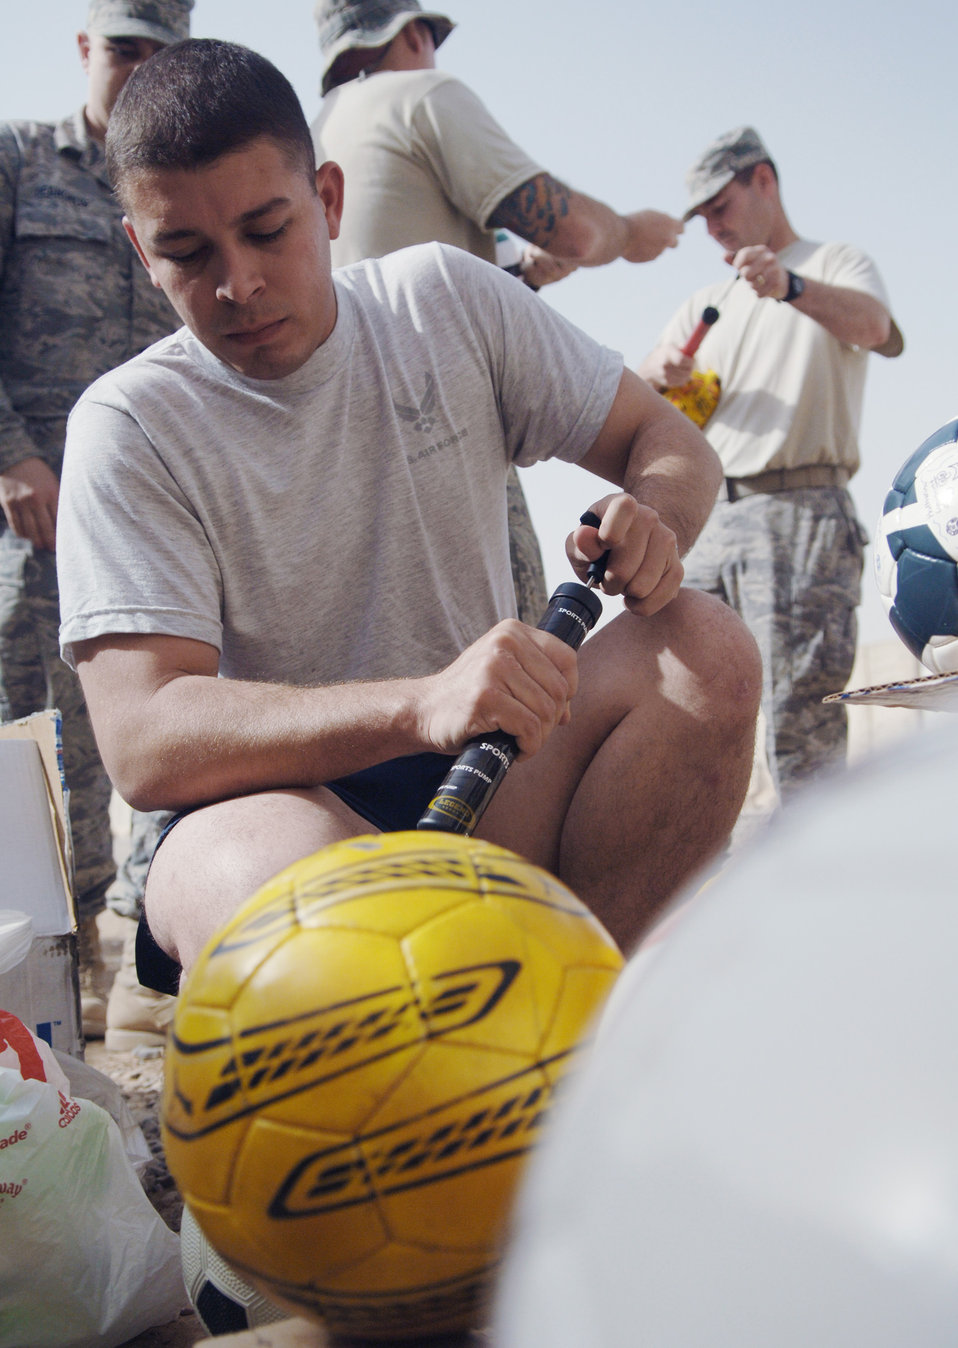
Iraqi children get a kick out of donations

Airman 1st Class Jefferson Aguiar inflates a soccer ball July 15 at Joint Base Balad, Iraq. The Pennsylvania State University chapter of the Phi Kappa Tau fraternity sponsored a donation drive at a soccer tournament in June, and then shipped the balls here for distribution. Airman Aguiar is assigned to the 727th Expeditionary Air Control Squadron.